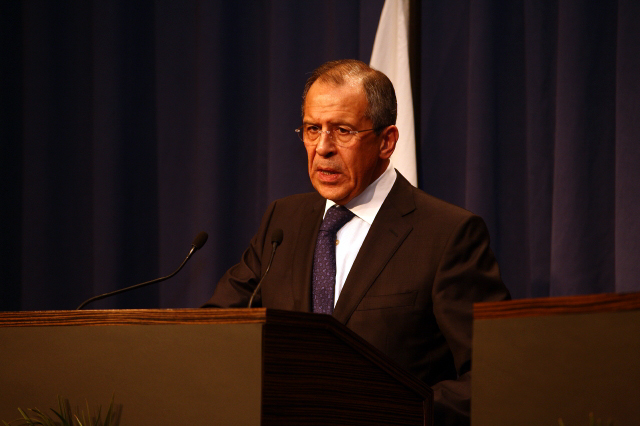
Press Conference With Russian Foreign Minister

Press conference after dinner meeting between U.S. Secretary of State Hillary Rodham Clinton and Russian Foreign Minister Sergey Lavrov in Geneva, Switzerland March 6, 2009.